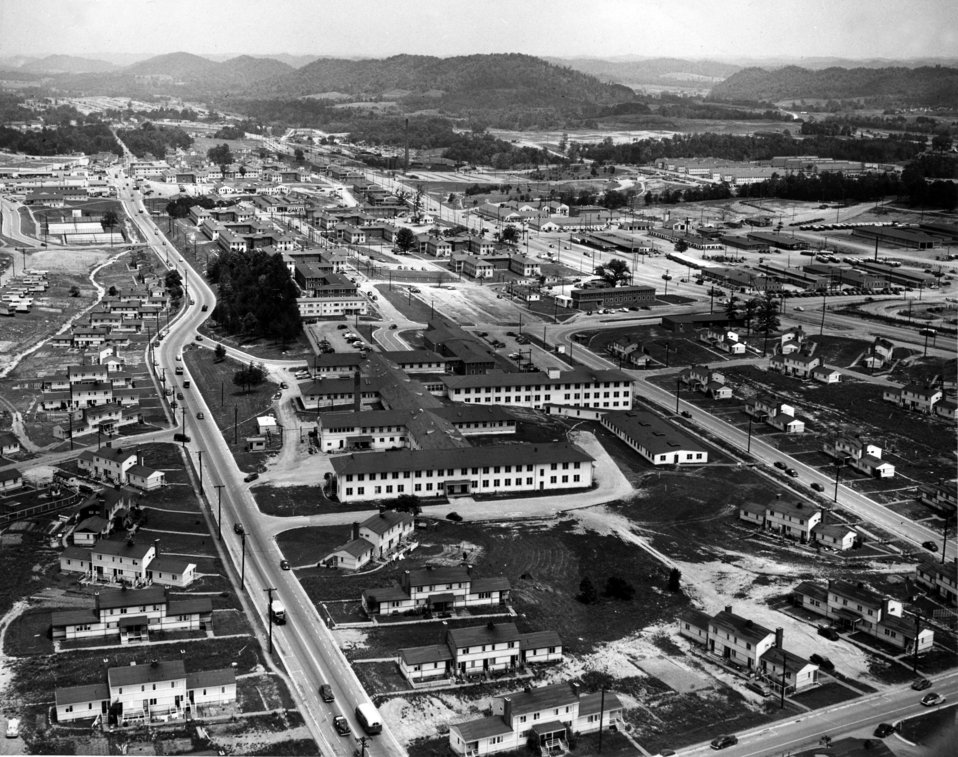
Hospital and Jackson Square Oak Ridge

3576 DOE photo by Ed 1947Westcott
Oak Ridge Tennessee